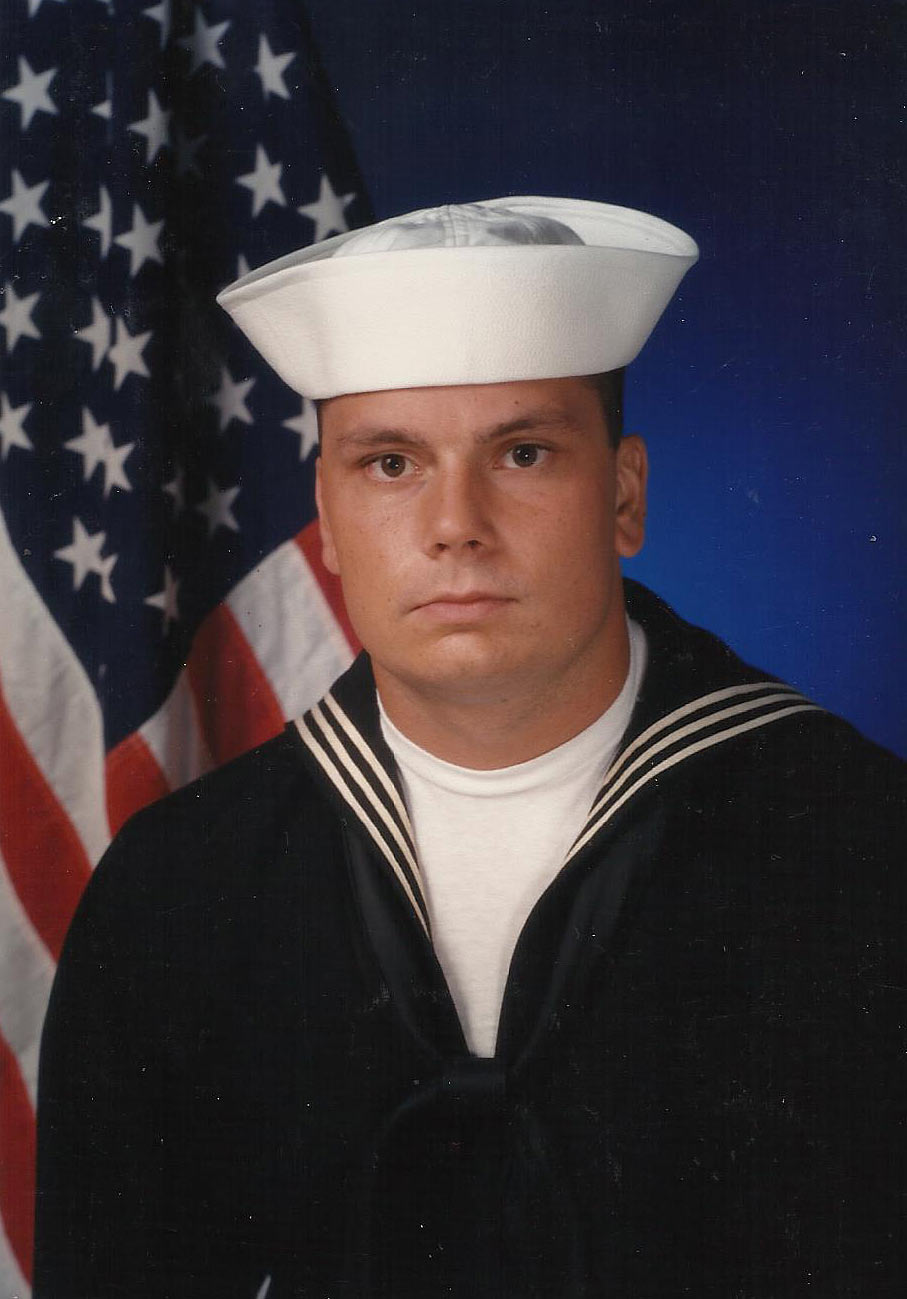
Jack Christiansen -- Pacific Region

Jack Christiansen, Aquaculture Engineer at Dworshak Fisheries Complex in Orofino, Idaho, served from 4/1988 to 12/1993 as a Naval Nuclear Reactor Operator primarily aboard the USS Texas CGN-39.